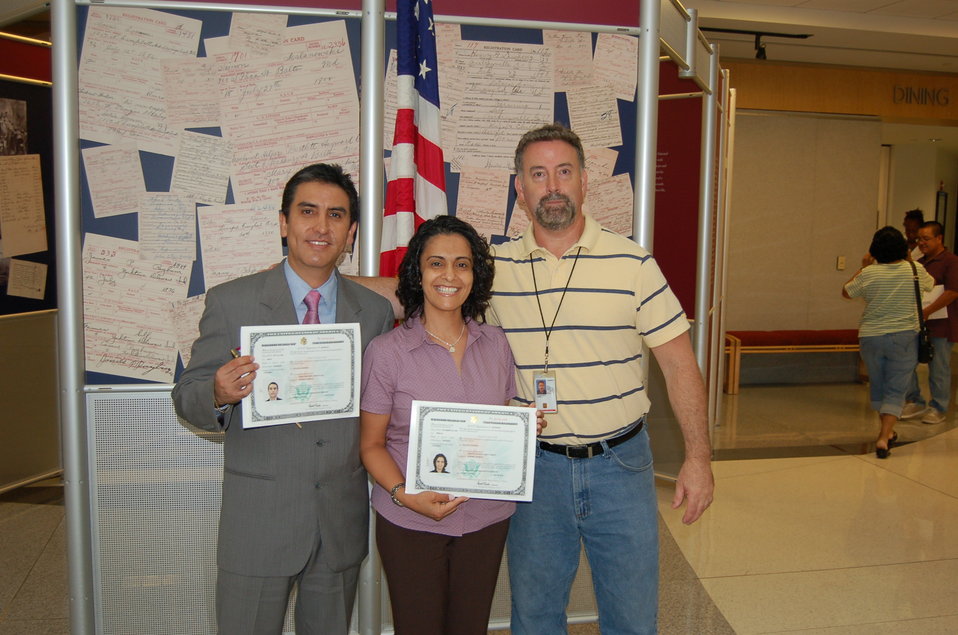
New Citizens